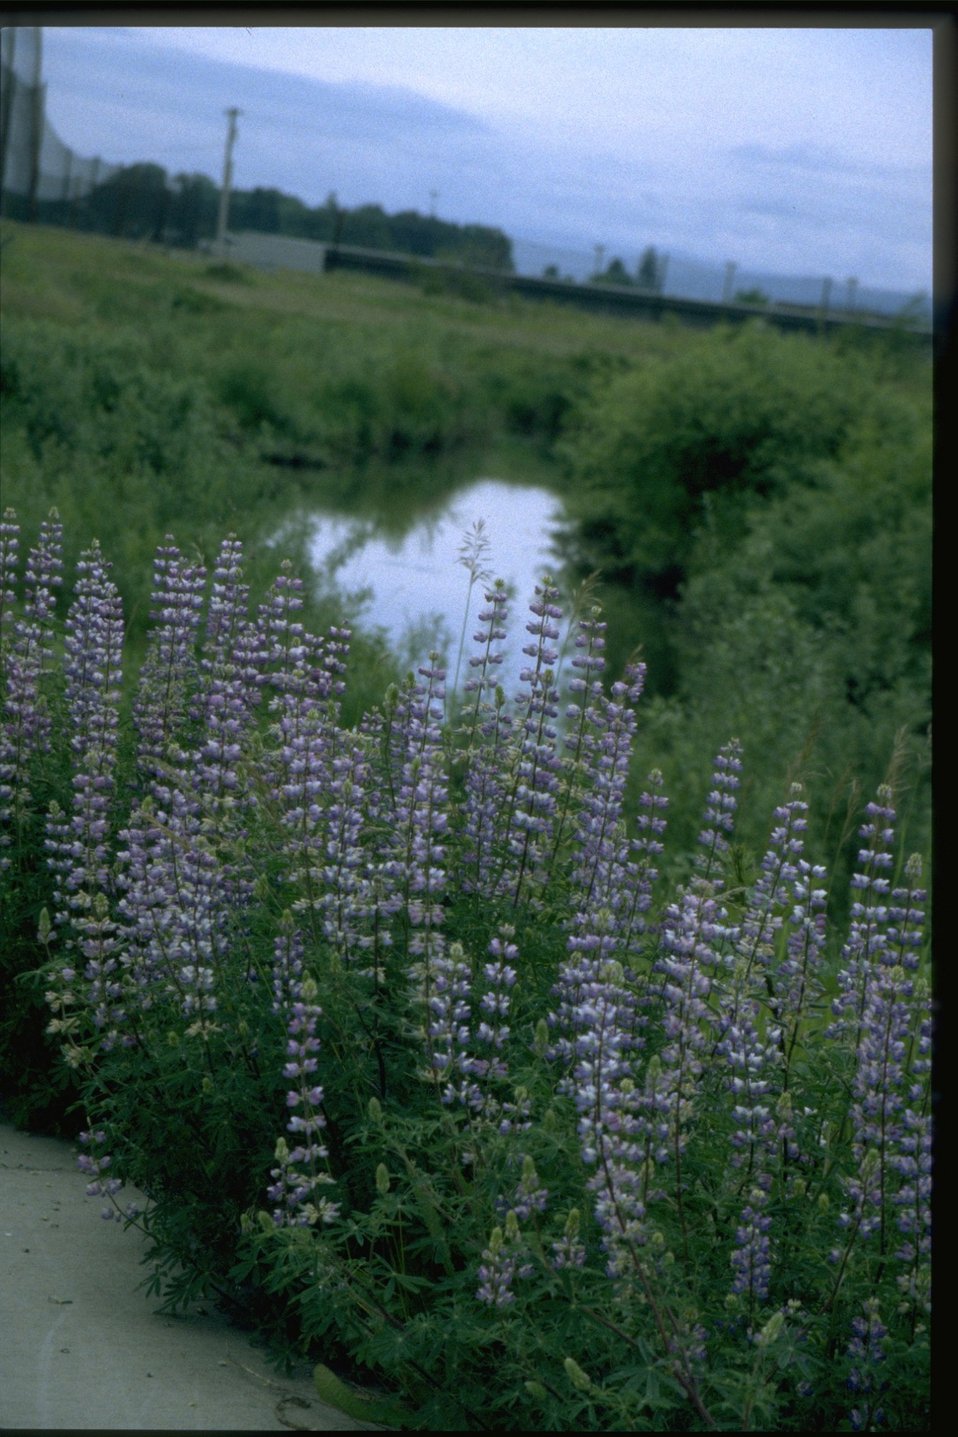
Medium shot of lupine wildflowers.